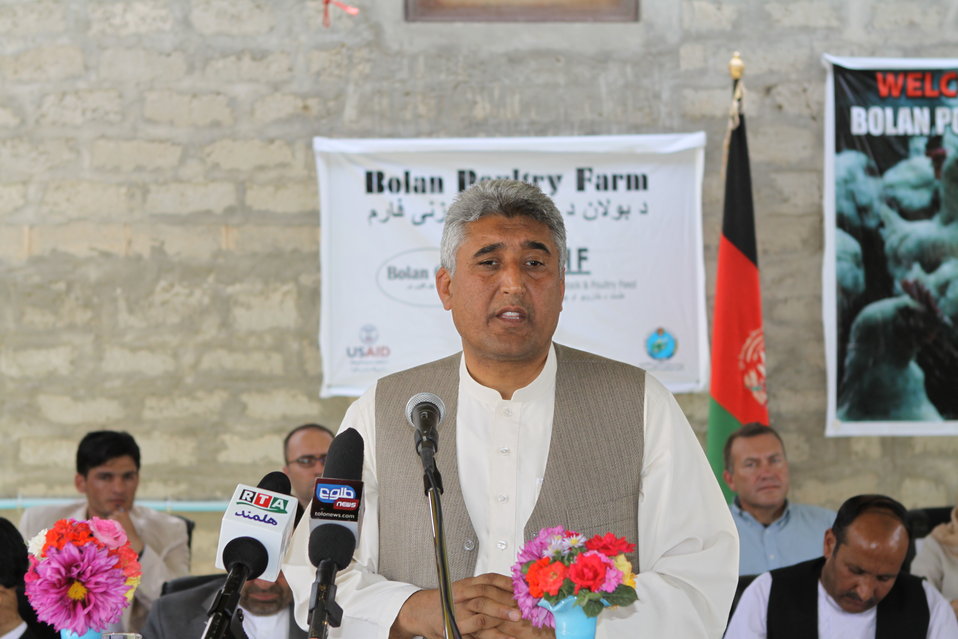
Bolan Poultry Farm